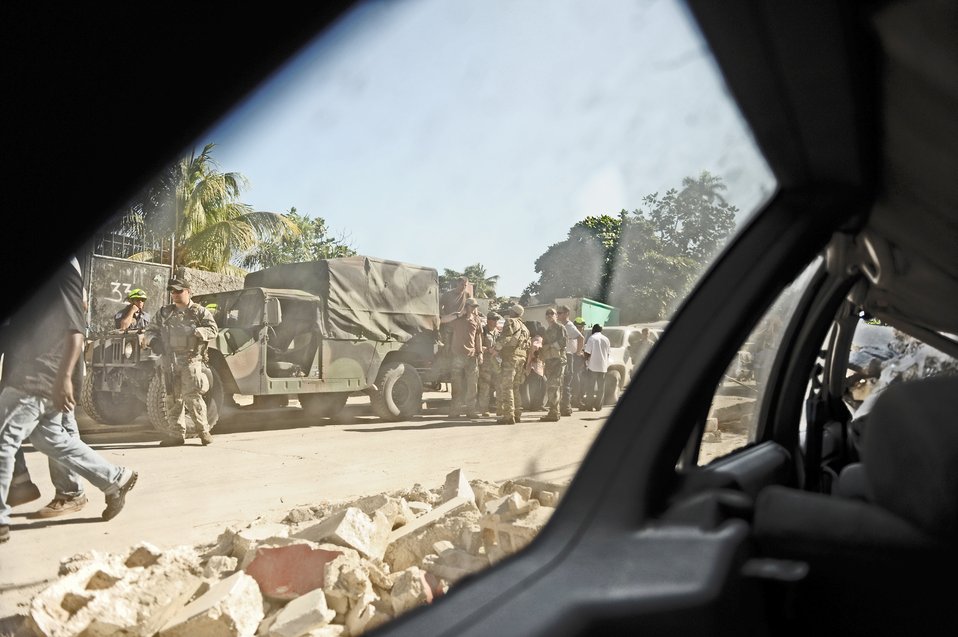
Haiti Earthquake Relief

An Air Force search and rescue team prepares to begin looking for survivors during rescue operations Jan. 17, 2010 in Port-au-Prince, Haiti. The Airmen are from the 23rd Special Tactics Squadron at Hurlburt Field, Fla. Department of Defense assets have been dispatched to Haiti to assist with humanitarian assistance and disaster relief after a magnitude 7 earthquake hit the country Jan. 12, 2010.